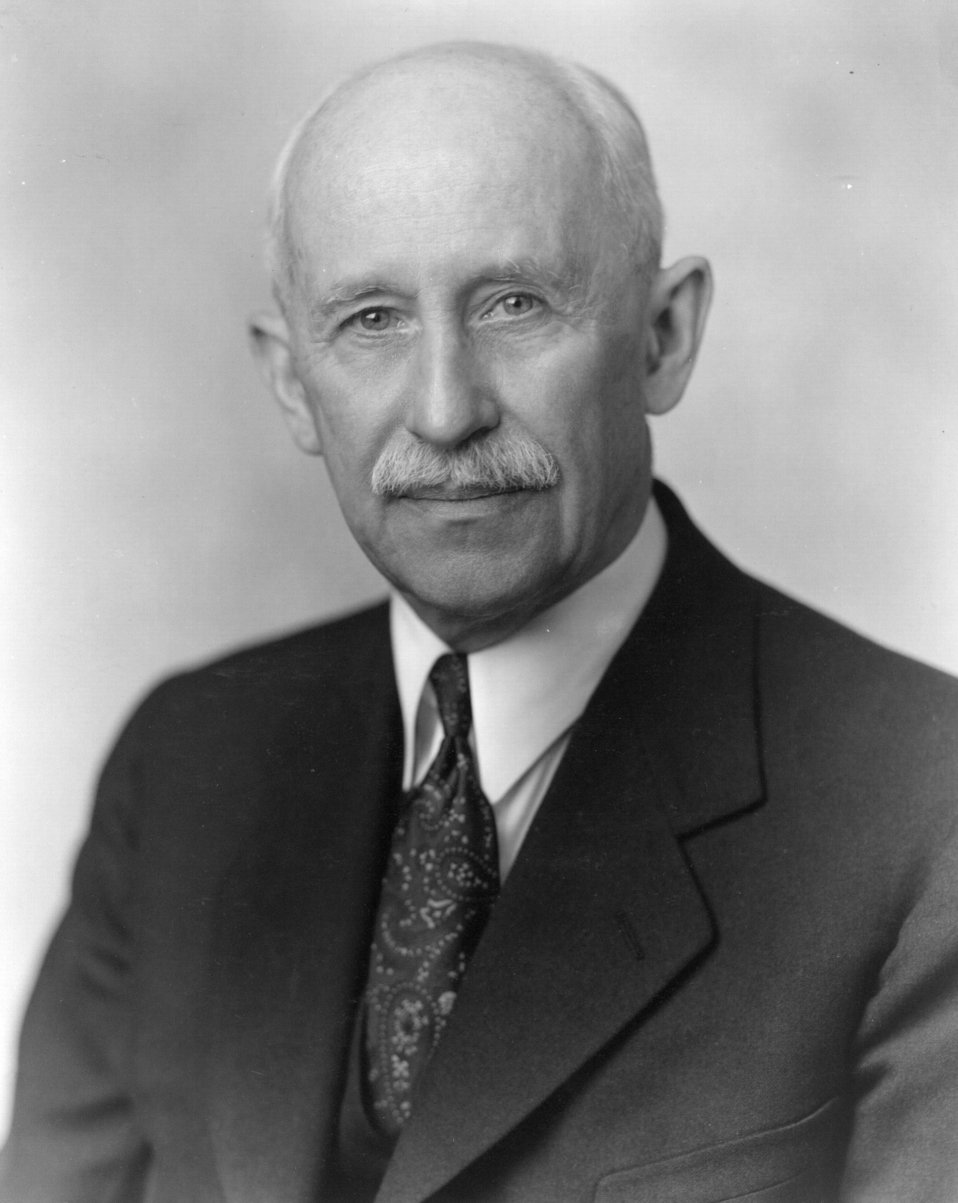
Orville Wright

1940's -- Orville Wright, 12/20/43